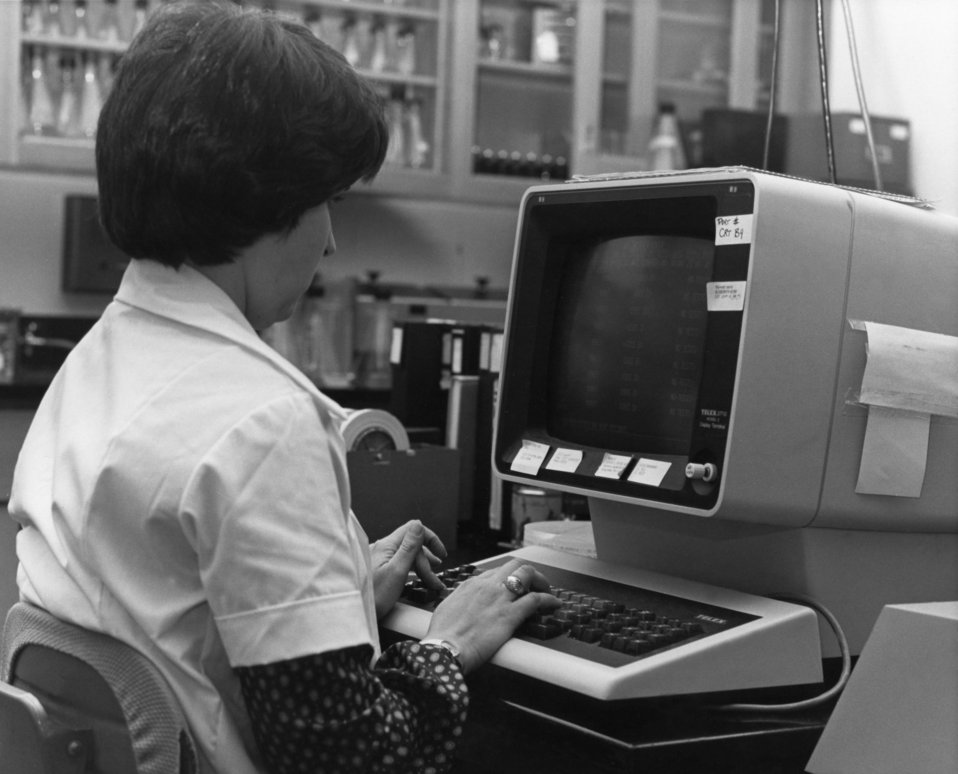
This 1980's photograph, taken within a Centers for Disease Control influenza testing laboratory, showed a laboratorian entering data into an influenza-specific database while seated at a computer workstation.